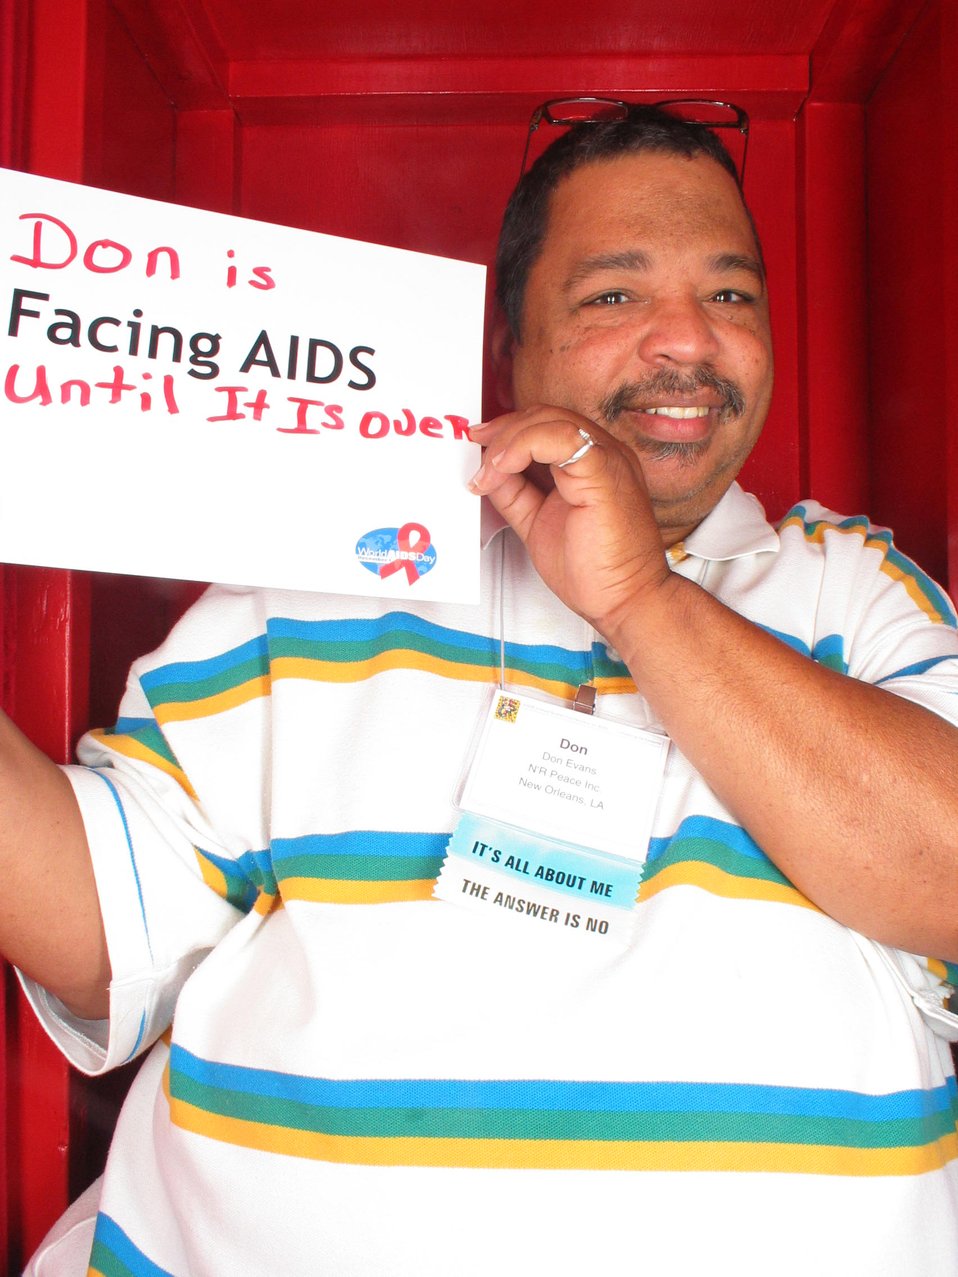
Don is Facing AIDS until it is over.